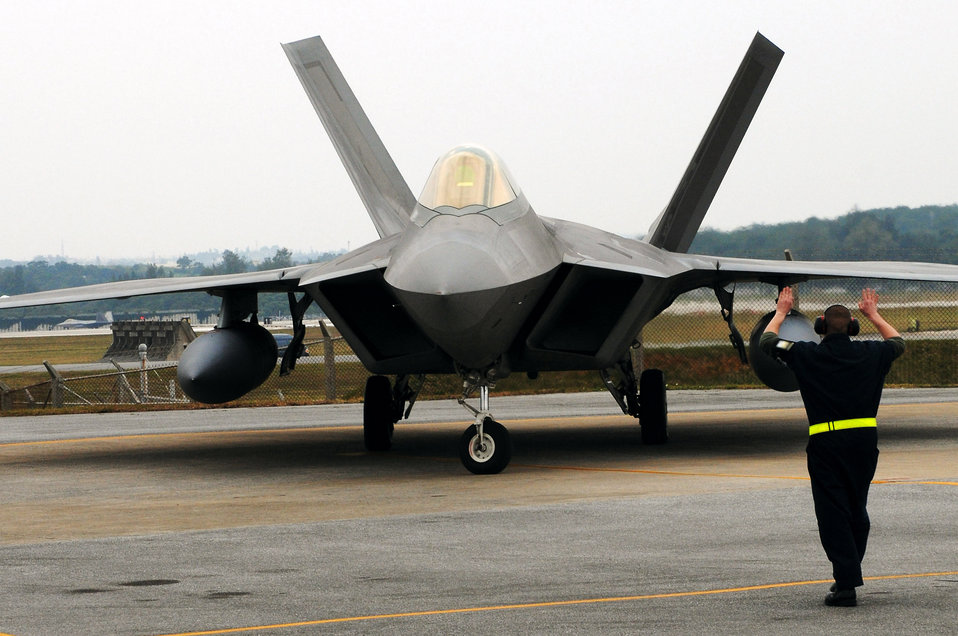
Raptors return to the Pacific

Staff Sgt. Gegory Slavik marshals in an F-22 Raptor Jan. 12. The aircraft is one of 12 deployed from Langley Air Force Base, Va., as part of an air expeditionary force rotation. Sergeant Slavik is a dedicated crew chief with the 27th Expeditionary Fighter Squadron.